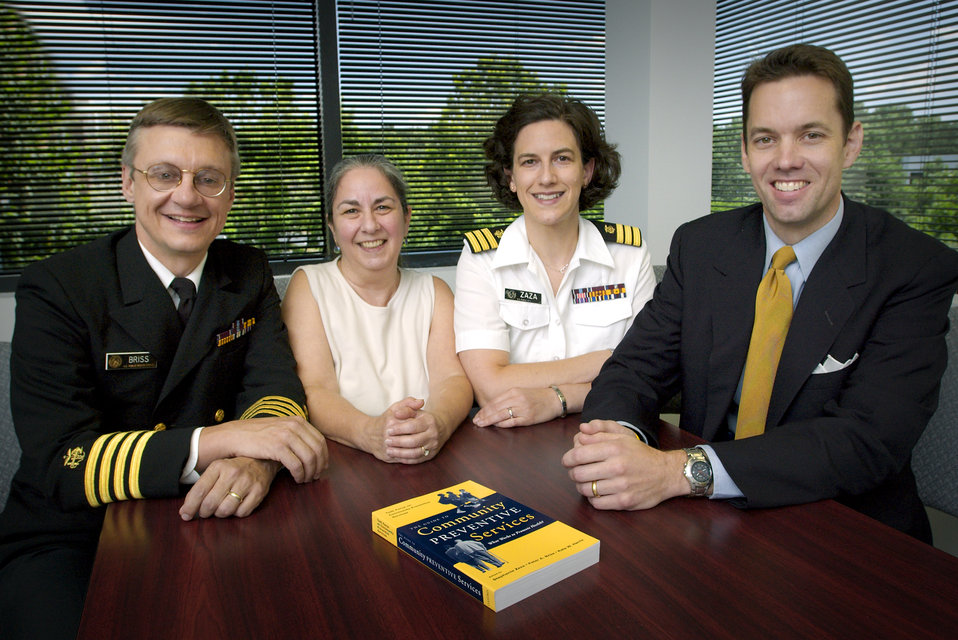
This 2005 photograph featured members of 'The Task Force on Community Preventive Services'. Seated left to right, was Peter Briss, Kate Harris, Stephanie Zaza and Brad Myers, during CDC's promotion of the book, 'The Guide to Community Preventive Services', by The Community Guide